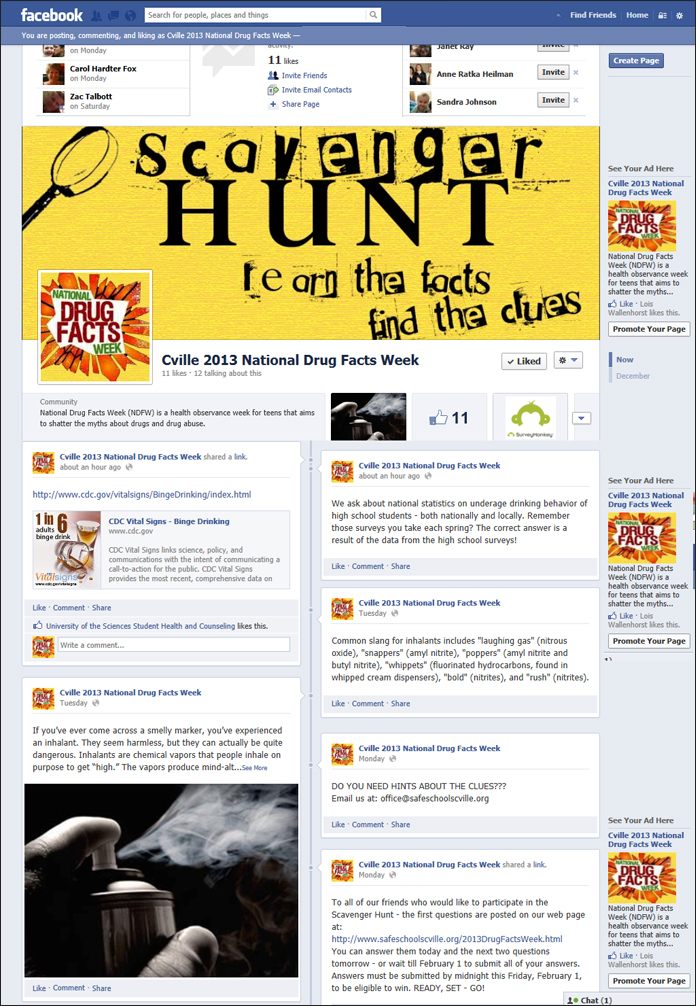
NatDrugFactsFacebook NDFW 2013

Charlottesville, Va. Safe Schools Healthy Students NDFW Events 2013.